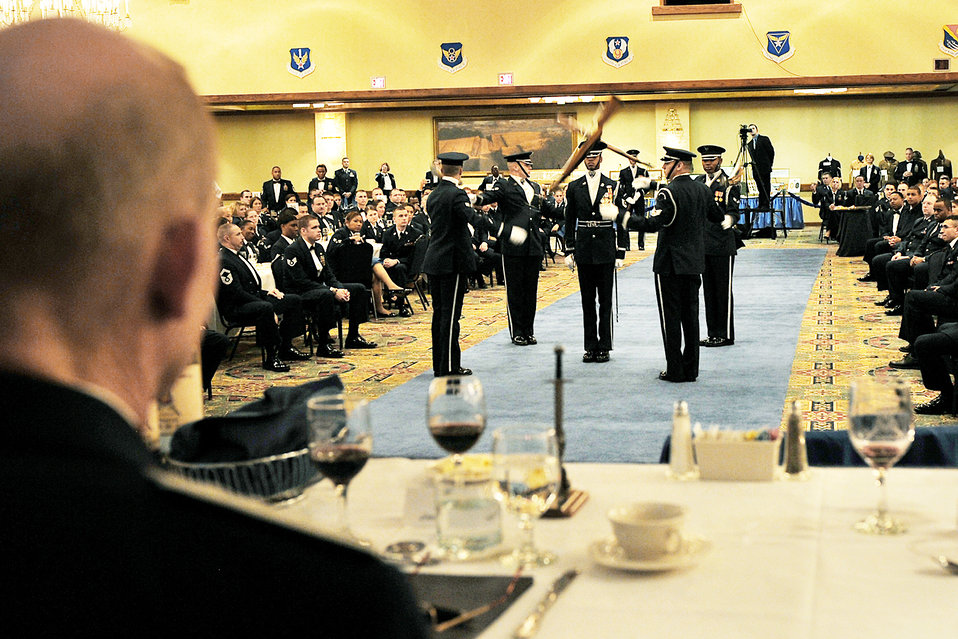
Order of the Sword

Retired General John D.W. Corley looks on as the Air Force Honor Guard drill team performs during the Air Combat Comand Order of the Sword ceremony Jan. 13, 2010, in Omaha, Neb. General Corley is the former commander of ACC.